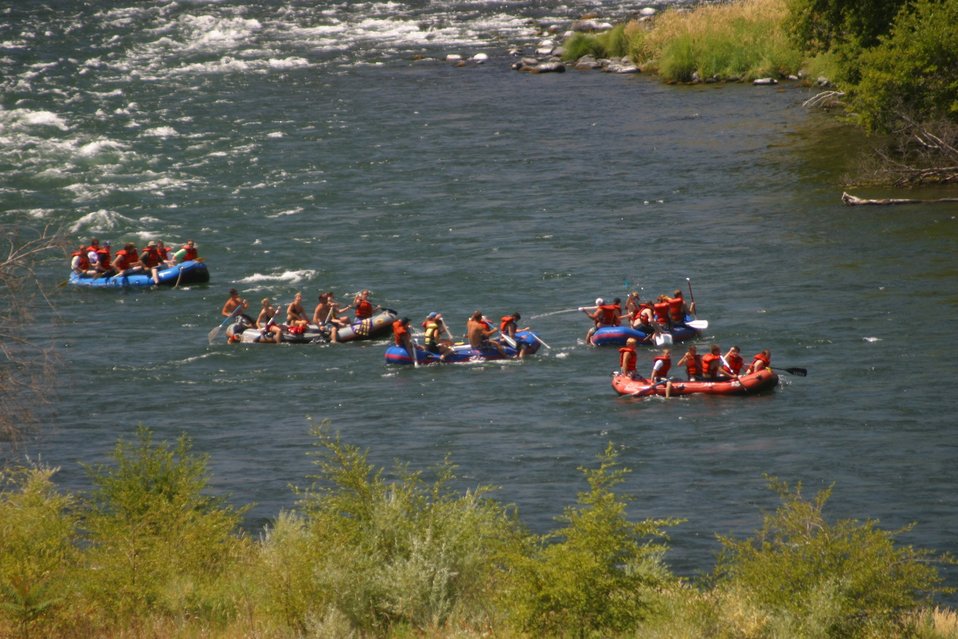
View from the Maupin Bridge looking up stream of the Lower Deschures River.